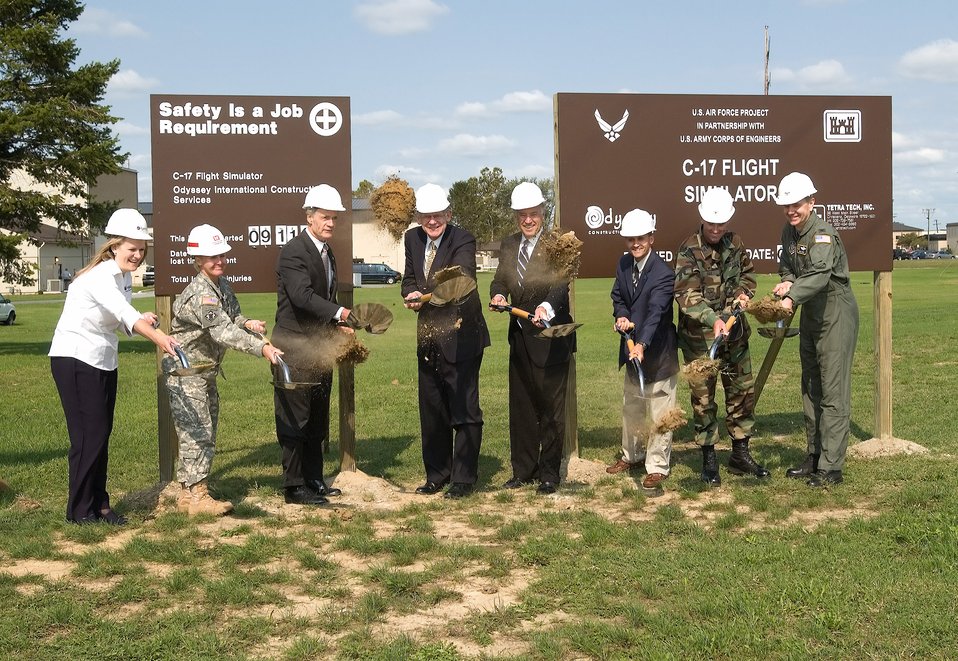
Training

Ms. Whitney McBride, president of Odyssey Construction; Lt. Col. Gwen Baker, U.S. Army Corps of Engineers Philadelphia District commander; Sen. Thomas Carper; U.S. Rep. Mike Castle; Sen. Joseph Biden; Dover Mayor Stephen Speed; Col. Sam Cox, 436th AW commander; and Col. David Wuest, 512th AW vice commander, break ground at the site of the future C-17 Aircrew Training Facility here Monday.